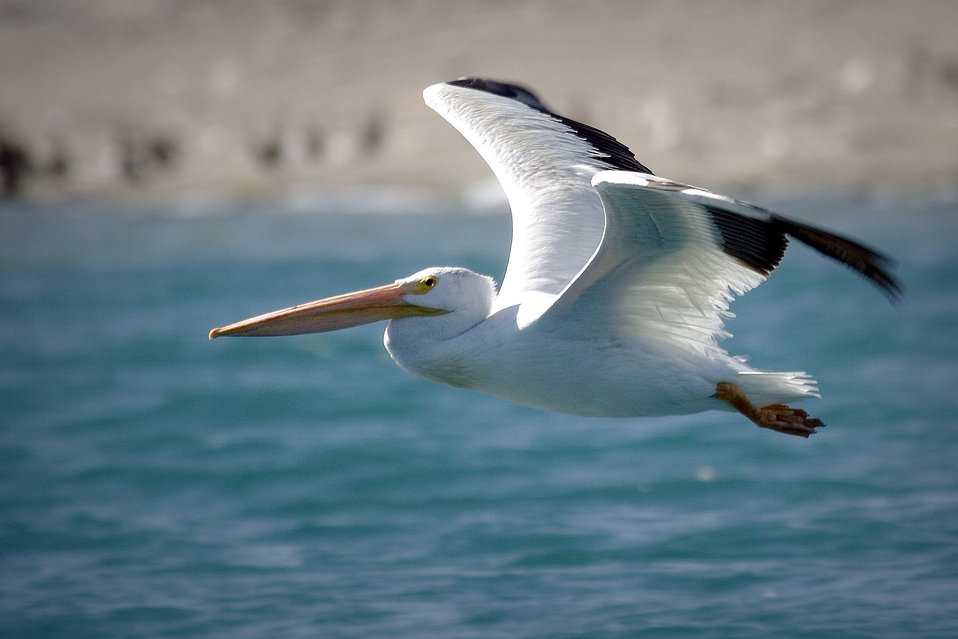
Anaho Island NWR adult American white pelican